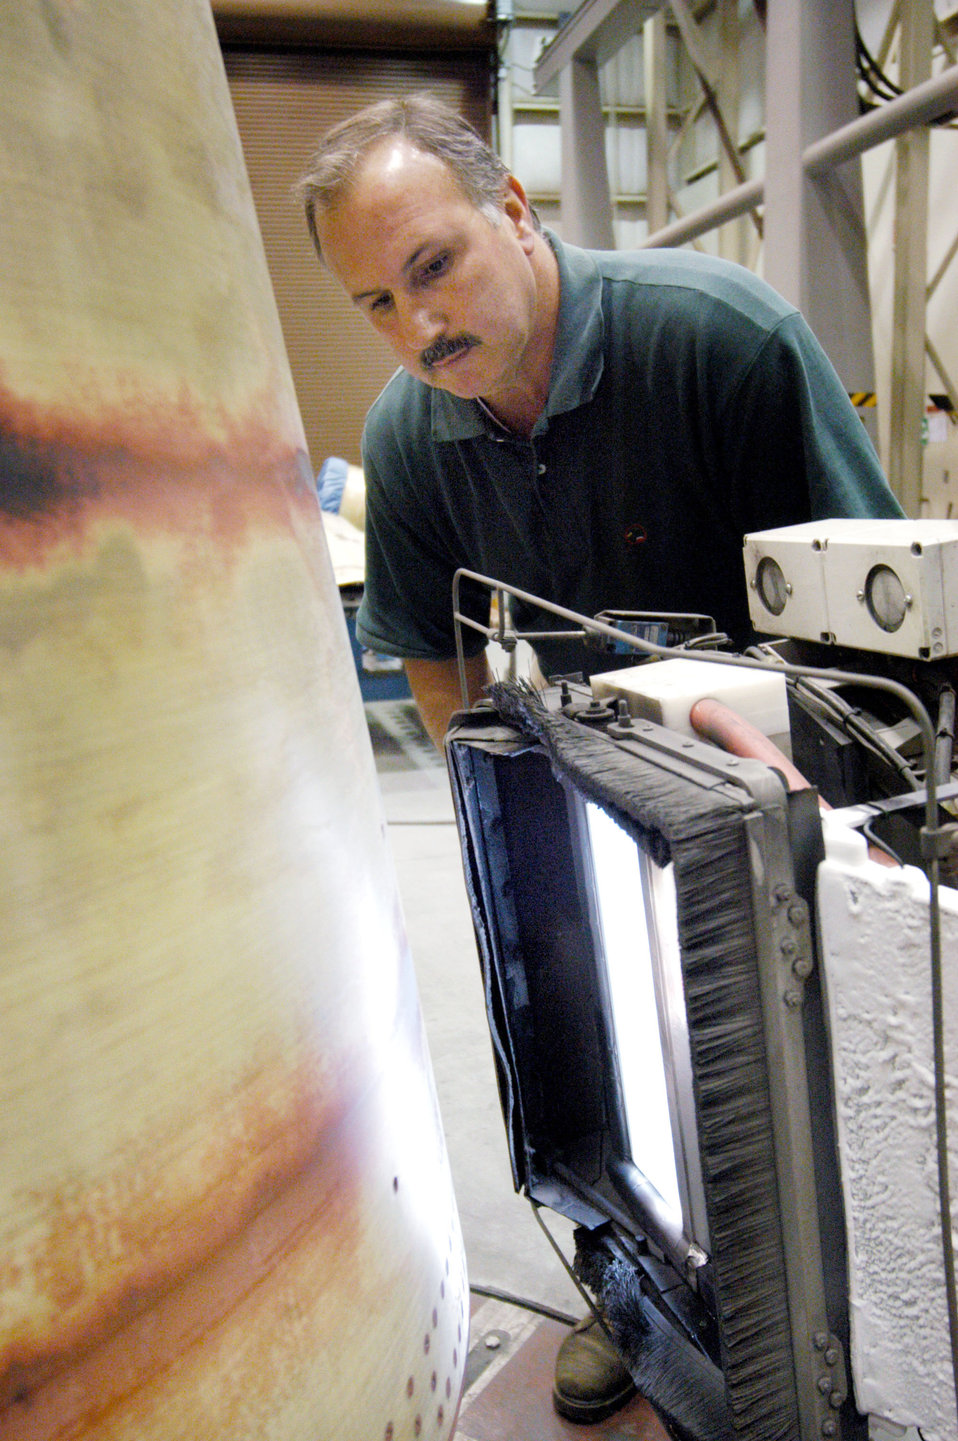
Out with the old

ROBINS AIR FORCE BASE, Ga. -- Mario Largaespada monitors a flashjet that is removing paint from an F-15 Eagle radome. The environment-friendly flashjet uses a stripping head to burn paint off. Then, a vacuum subsystem removes the burnt paint. Mr. Largaespada is the paint shop supervisor in the Warner Robins Air Logistics Center's maintenance directorate here.